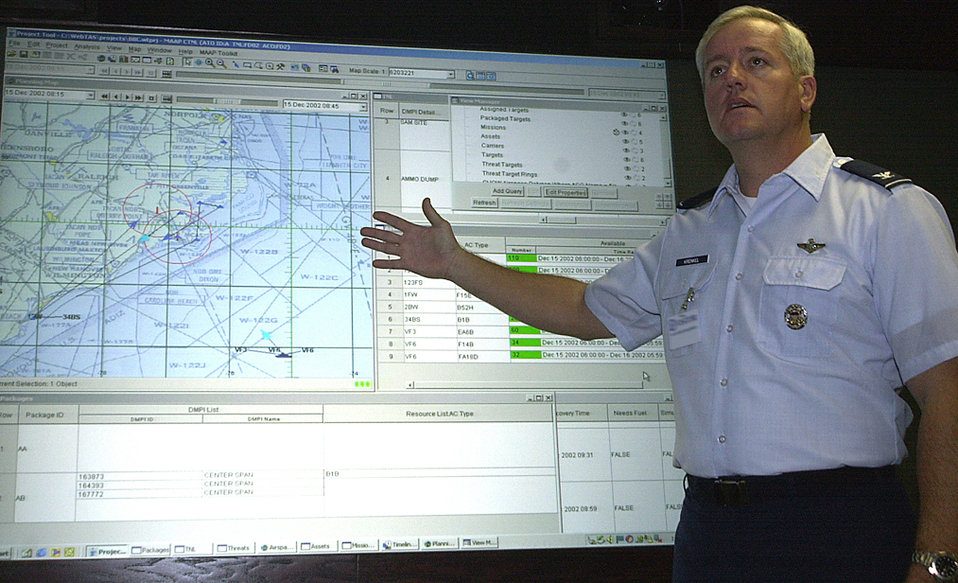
Software improves accuracy, quickens air war planning

WASHINGTON -- Col. Jon Krenkel, commander of the Air Force's Command and Control Battlelab, points out features of the master air attack plan toolkit. The toolkit is a new suite of software tools designed to make production of the MAAP and the subsequent air tasking order quicker and less prone to error. The MAAP toolkit was used successfully at the 2002 Joint Expeditionary Forces Experiment at Nellis Air Force Base, Nev.